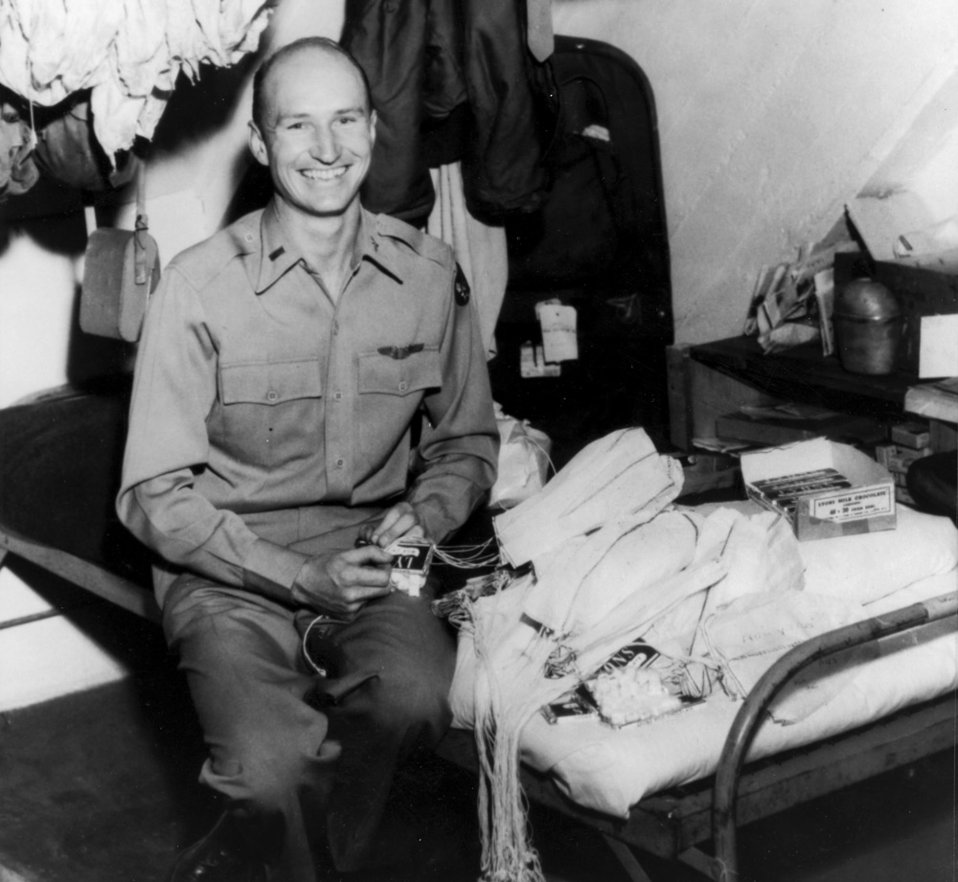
A child of the Berlin Airlift tells her story

1st Lt. Gail Halvorsen rigs candy bar parachutes to drop to children during the Berlin Airlift. Known as the Berlin Candy bomber, retired Colonel Halvorsen dropped candy from his C-54 Skymaster while bringing supplies to the city of Berlin.